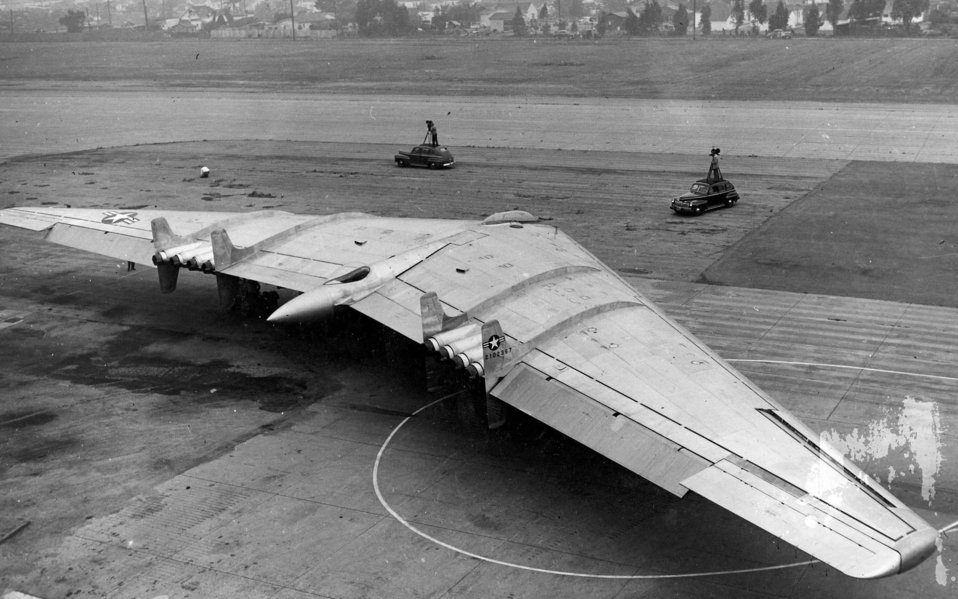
Northrop YB-49

The YB-49 is photographed at the Northrop facility, Hawthorne, Calif., Dec. 23, 1948.